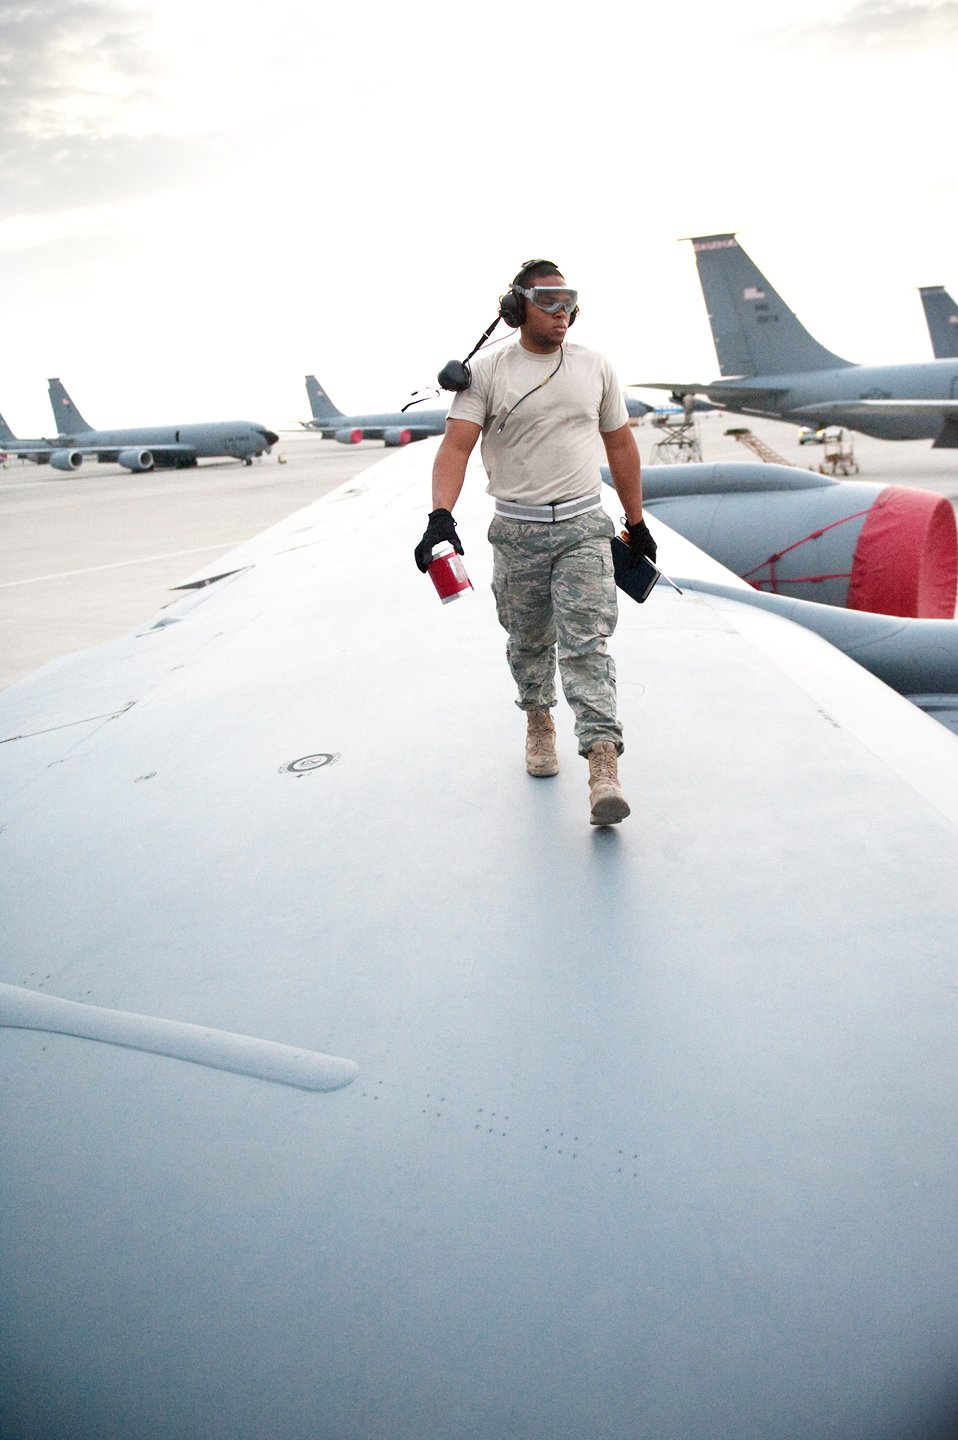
KC-135 crews prepare for mission

Airman 1st Class Torres Rivera, 340th Aircraft Maintenance Unit crew chief, tops off a KC-135 Stratotanker with hydraulic fluid during regular servicing Dec. 2, 2009, at an airfield in Southwest Asia.